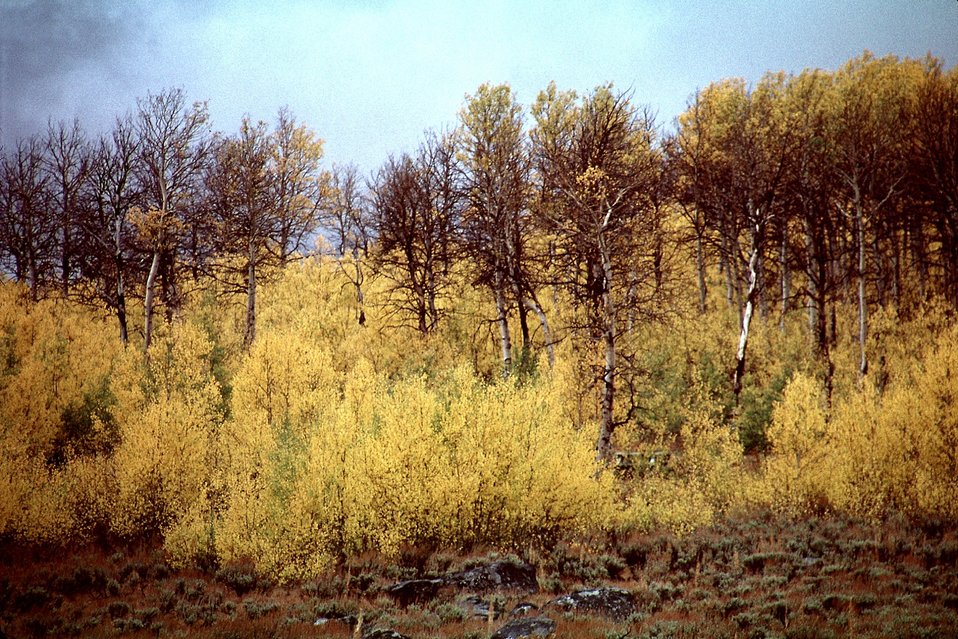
Aspens at Fish Late, Steen's Mountain.